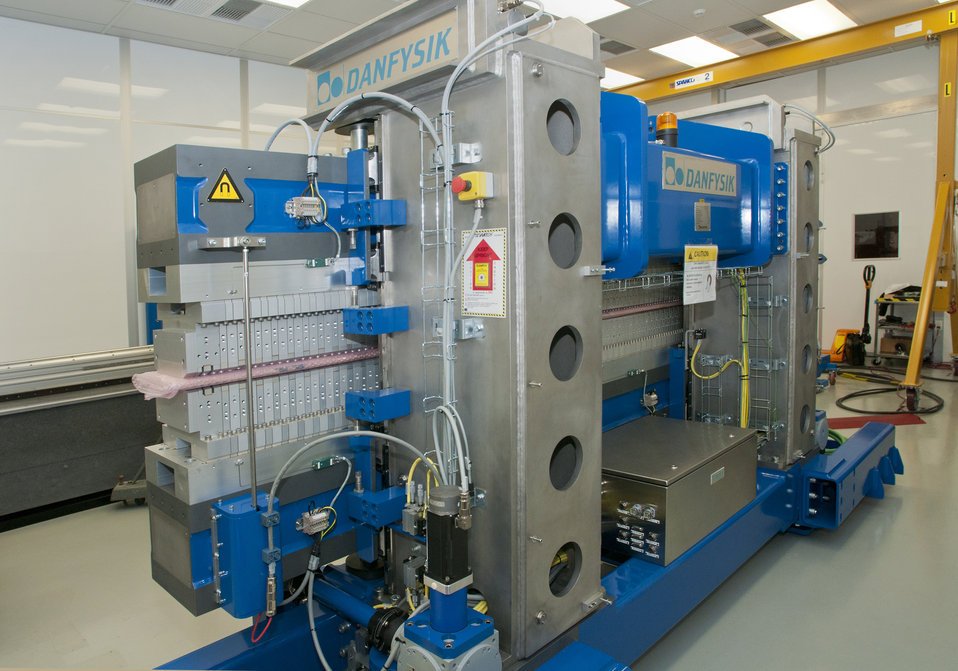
Brookhaven National Laboratory's National Synchrotron Light Source II will use six damping wigglers, which will make the new facility one of the brightest synchrotron light sources in the world.

The wiggler makes the electron beam more uniform and straight, producing brighter emissions and creating a broad spectrum of light.